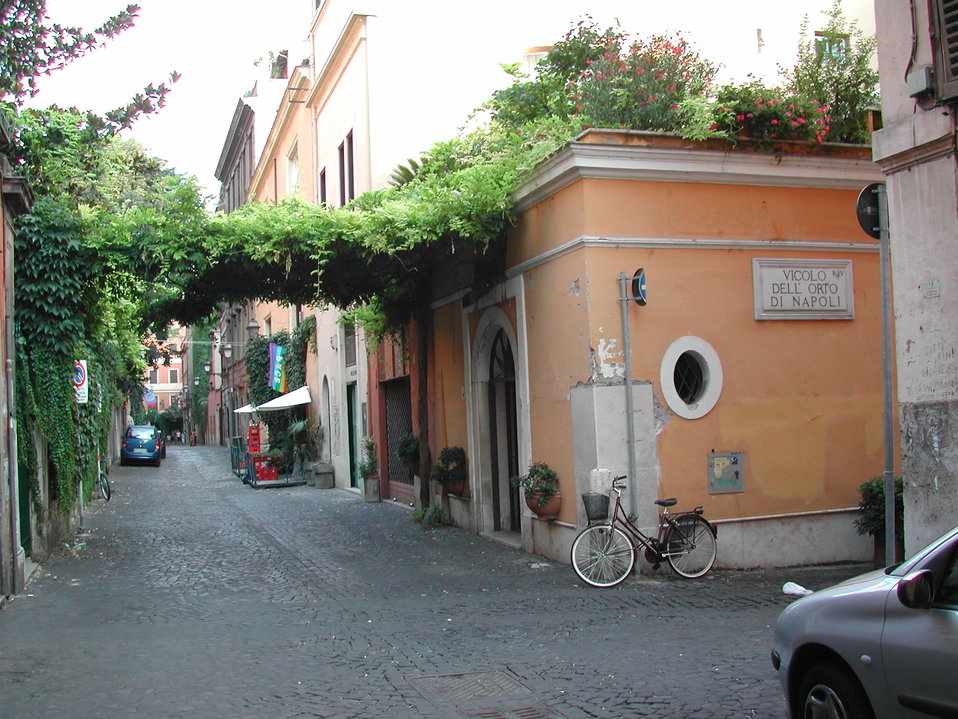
04 Margutta